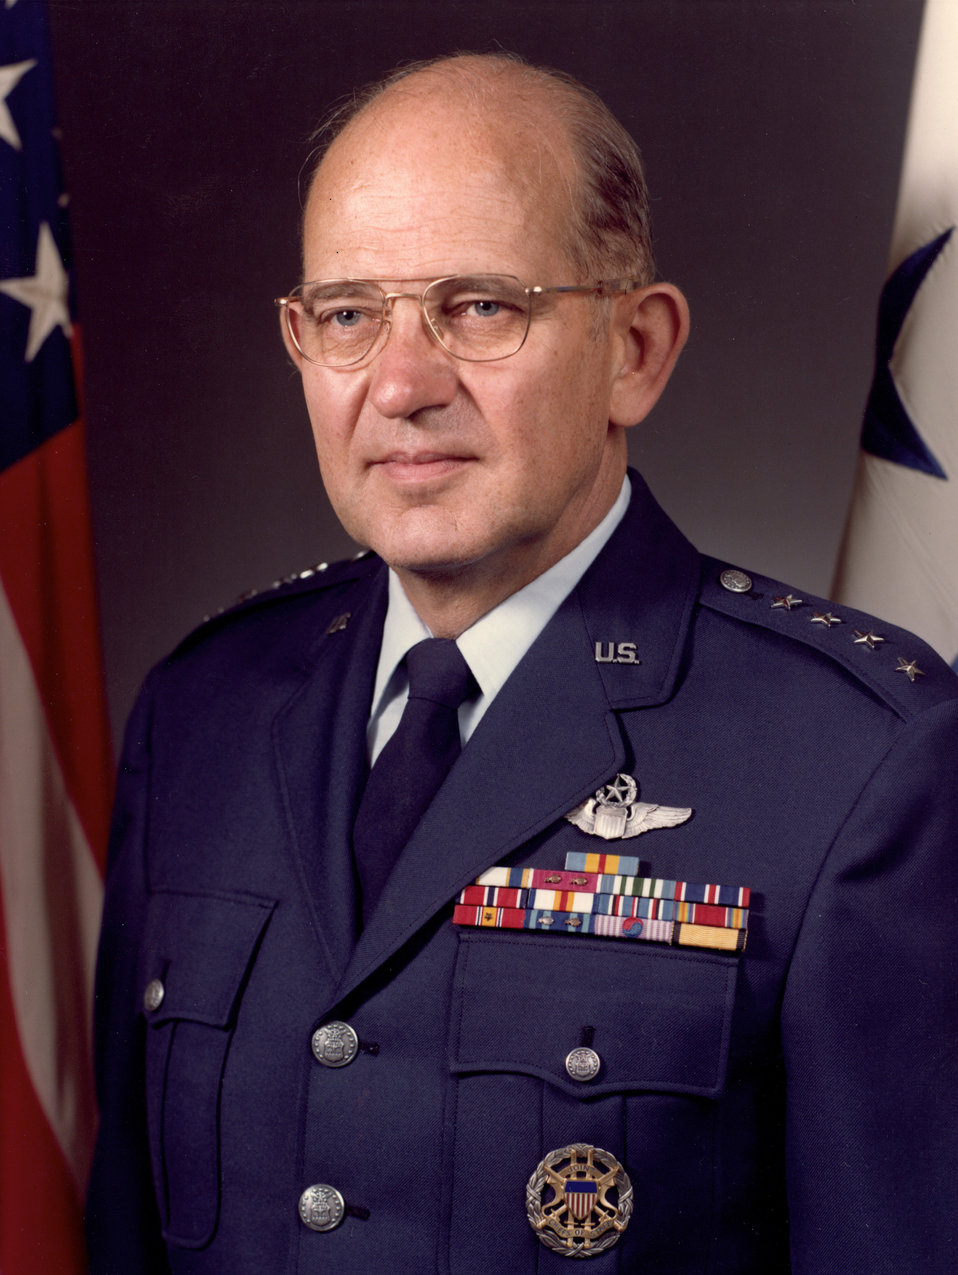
Gen. Lew Allen Jr., the 10th chief of staff of the Air Force, passed away Jan. 4 in Potomac Falls, Va.